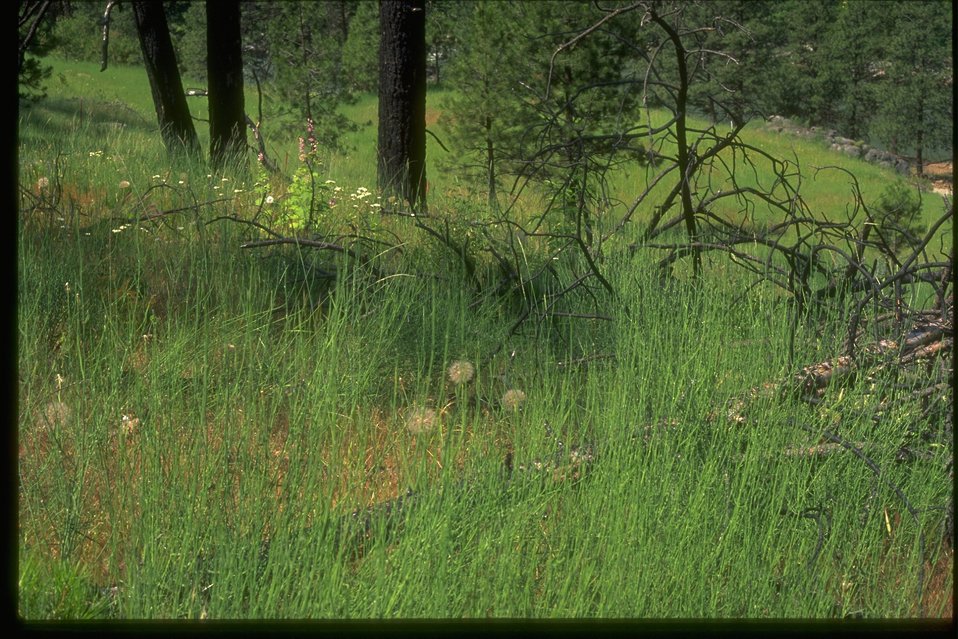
Rush skeleton weed (green) after a fire on BLM land.